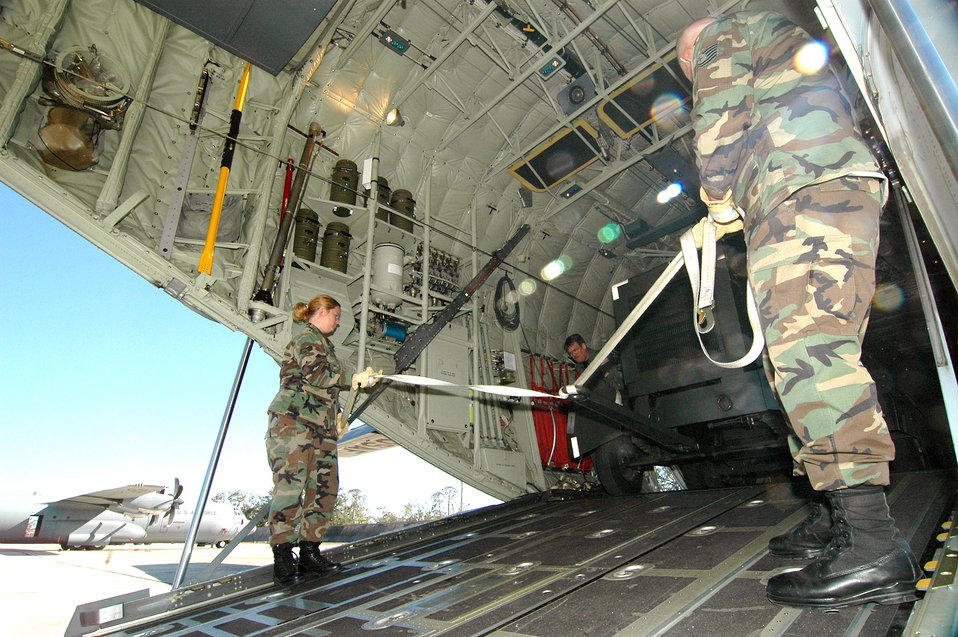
Back home

KEESLER AIR FORCE BASE, Miss. (AFPN) -- Reservists from the 41st Aerial Port unload a 5,000 pound generator from a C-130J Hercules. The aircraft returned home after flying missions out of Dobbins Air Reserve Base, Ga., since Hurricane Katrina bashed apart its home base. The 403rd Wing mission, which includes the 53rd Weather Reconnaissance Squadron's